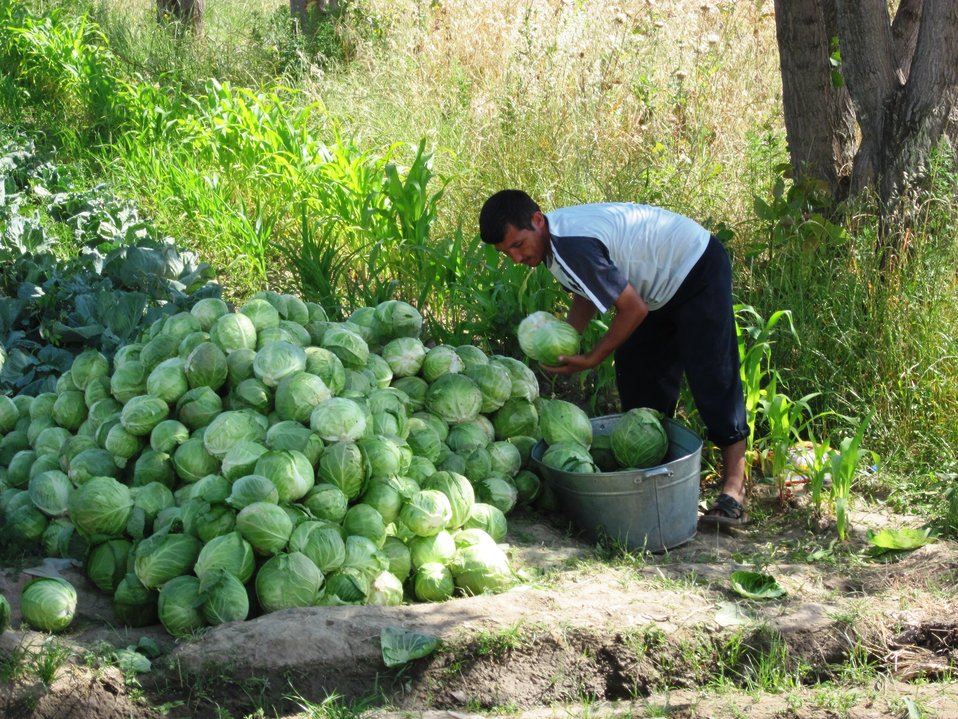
Tajik Farmer Takes Cabbage to the Market

A Tajik farmer takes cabbage to the market in Dushanbe, Tajikistan, on June 10, 2010.